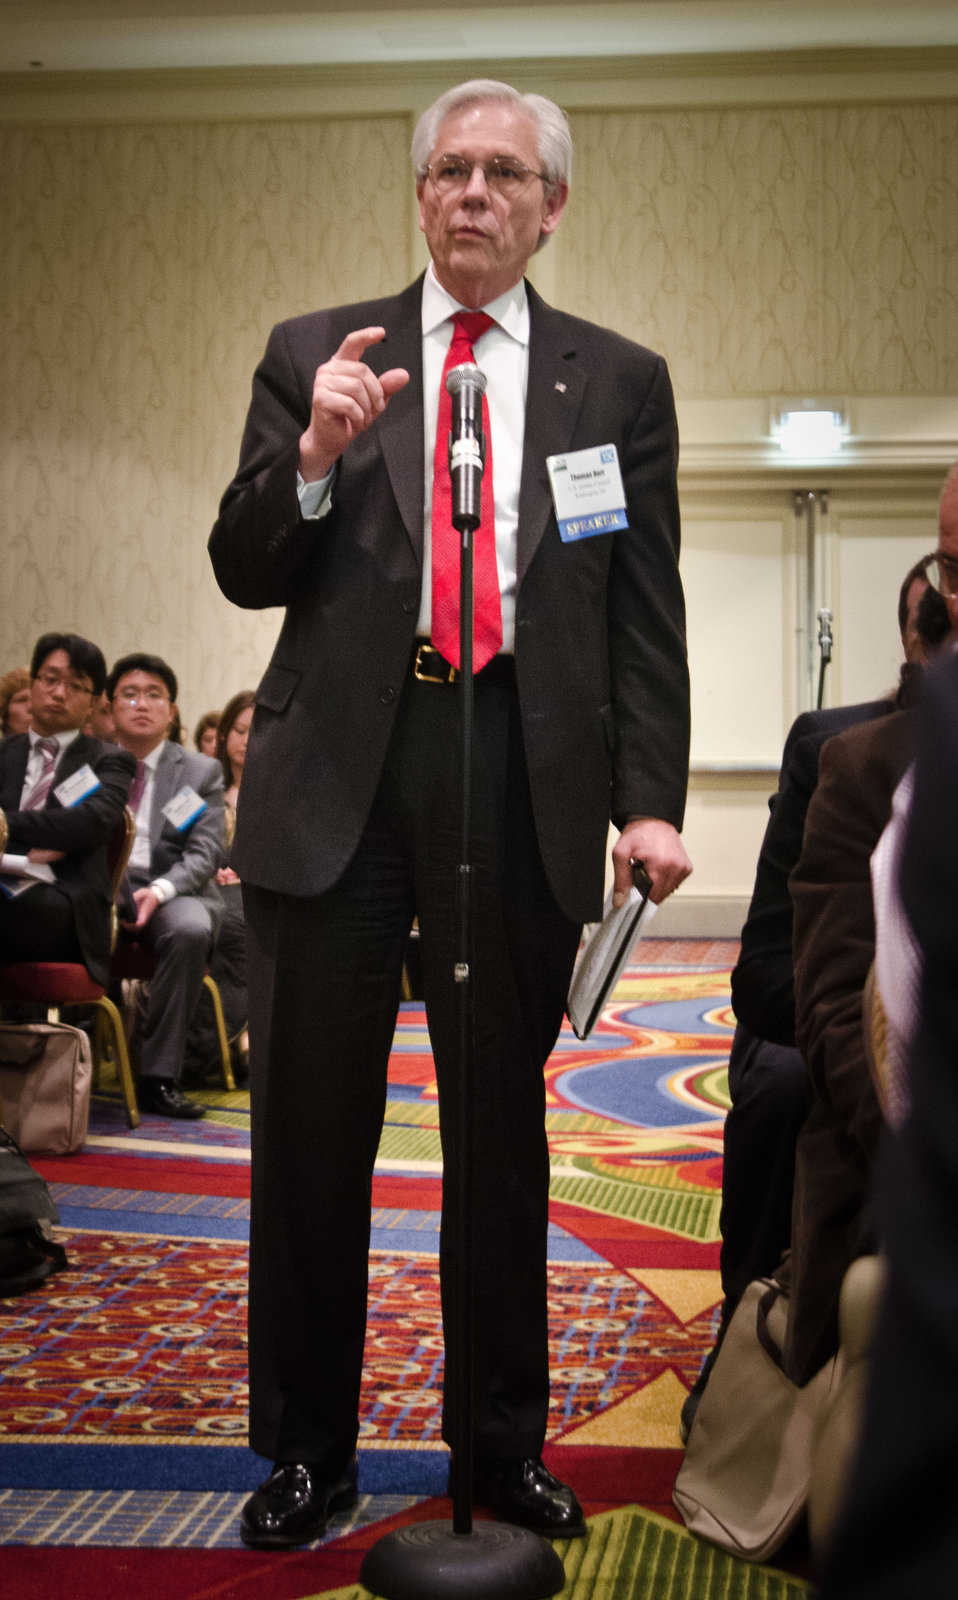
U.S. Grains Council President Thomas Dorr, asked a question, during “The Farm Income Outlook for 2012” session of the Food Prices & Farm Income Track, at the 2012 Agricultural Outlook Forum, “Moving Agriculture Forward, Growing, Innovating and Celebrating 150 Years.” held at the Crystal Gateway Marriott Hotel, Arlington, Virginia, on Friday, February 24, 2012. The session focused on general measures of the financial well being of the farm economy, including USDA’s official outlook for farm income, the distribution of income across farm households, and the competitiveness of the rural economy.